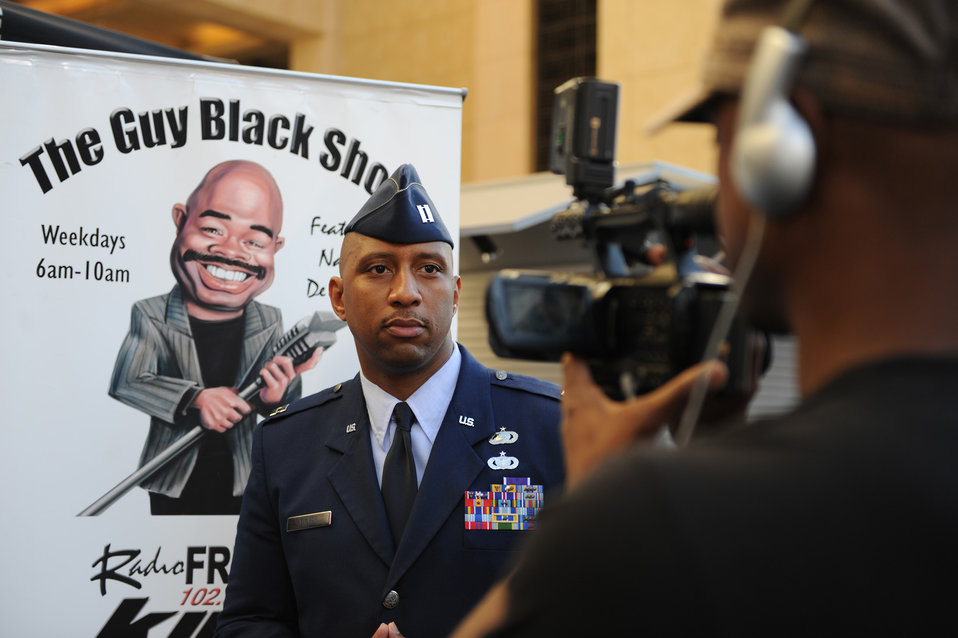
Air Force Expo in Hollywood

Capt. Grady Tucker does an interview on,